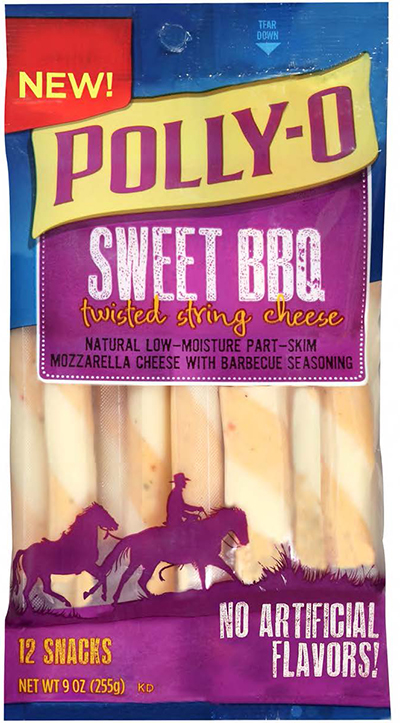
RECALLED – Cheese

October 25, 2013 – Product Recall – Kraft Voluntarily Recalls Some Varieties of Kraft And Polly-O String Cheese And String Cheese Twists Due to Premature Spoilage.